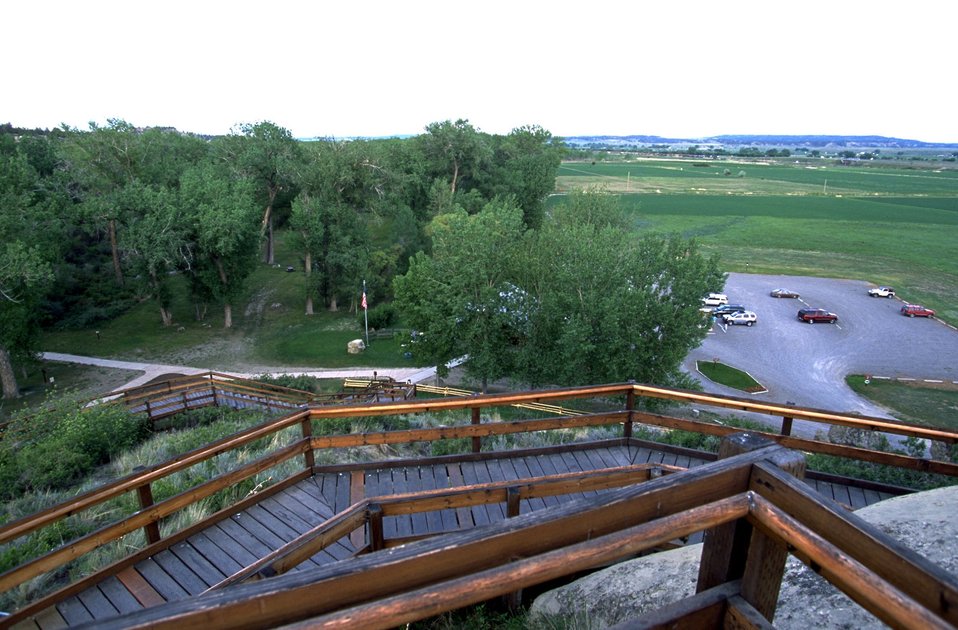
View of Pompeys Pillar Visitor Center and parking lot from the upper Signaure platform